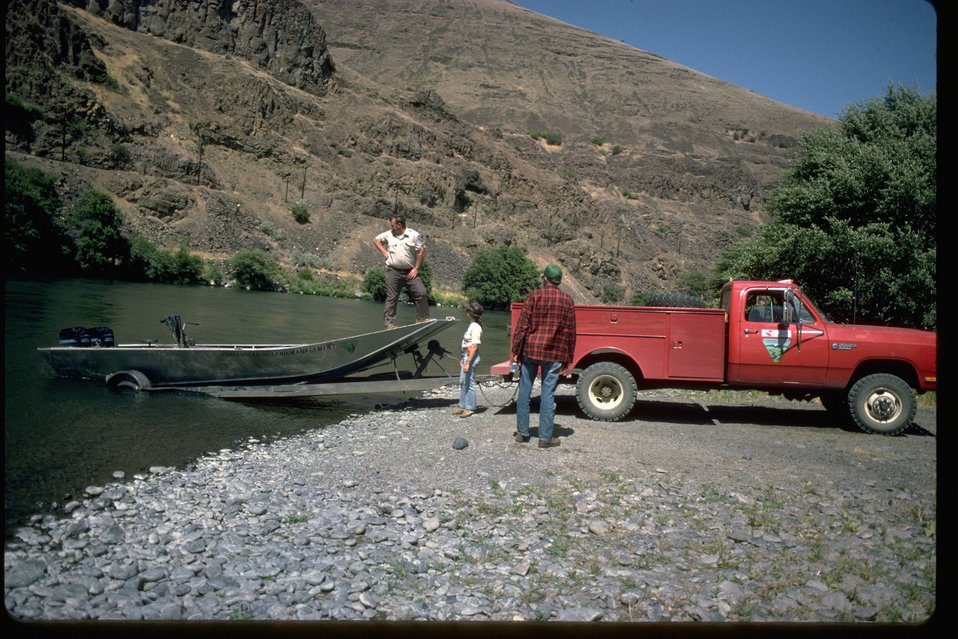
People loading a jet boat into the Deschutes River.